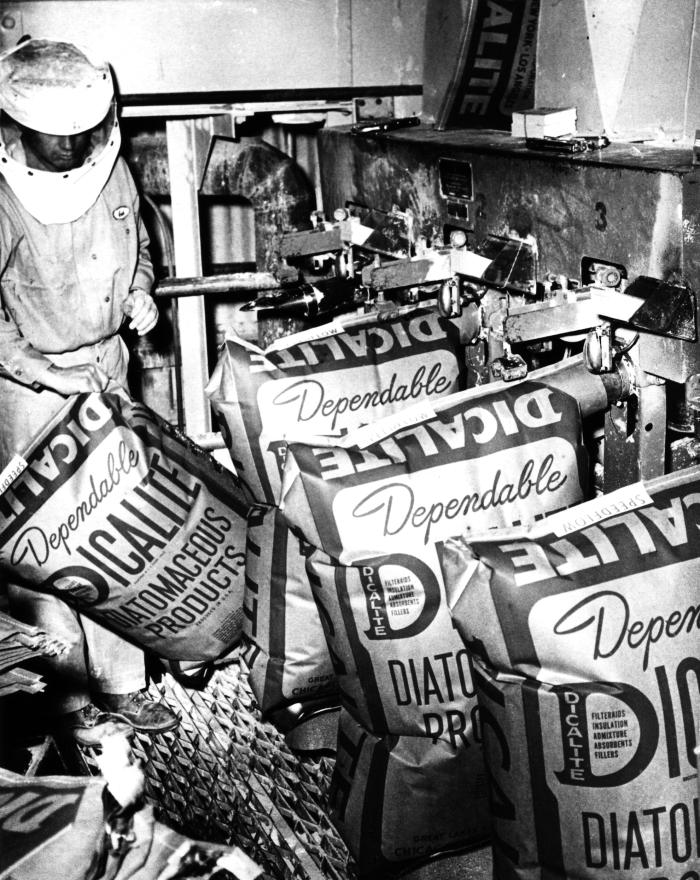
This 1958 historical photograph was provided by the Center for Disease Control's (CDC), National Institute for Occupational Safety and Health (NIOSH), and depicted a worker in Lompoc, California, handling bags of diatomaceous earth while wearing protective clothing. The image originally appeared in a U.S. Public Health Service Publication No. 601, in an article entitled,'Pneumoconiosis in Diatomite Mining and Processing', 1958. This image, and many others like it, was used to document the many aspects of various industrial activities, so as to better understand these workplace environments, and their associated hazards. In gaining a better understanding of workplace hazards, protocol-formulating bodies such as NIOSH, are better able to create a safer workplace through substantiation of appropriate safety regulations.